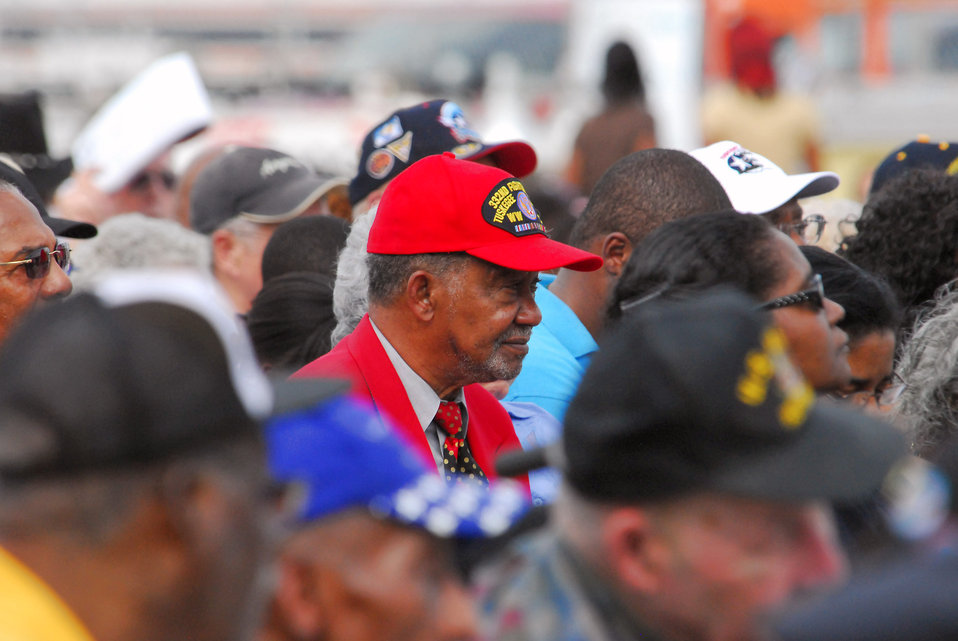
Historic homecoming for Tuskegee Airmen as site opens

One of the documented original Tuskegee Airmen wears the distinctive red hat and jacket at the opening ceremony of the Tuskegee Airmen National Historic Site Oct. 10 at Moton Field, Ala. One estimate notes the Airmen, now in their late 70s and early 80s, are dying at a rate of five per week.